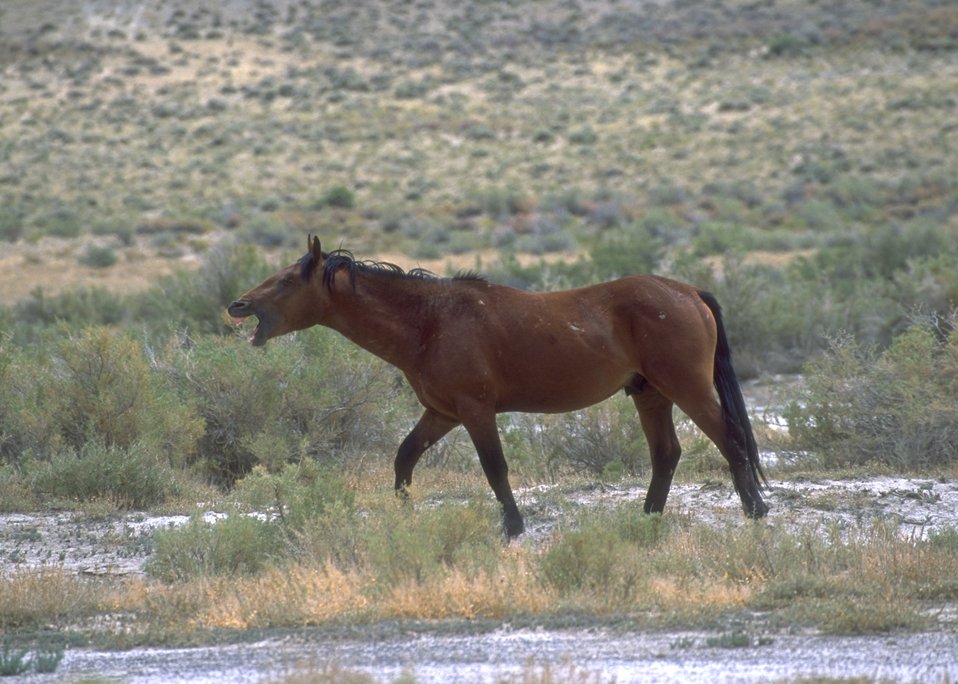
Wild horses, Rock Springs Field Office.